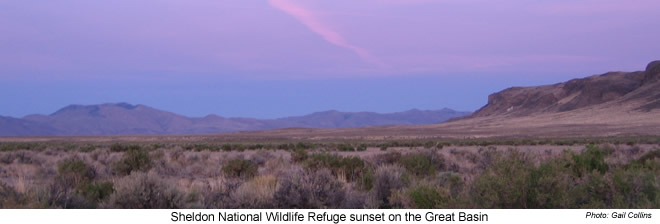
Sunset on great basin - Sheldon NWR

The landscape at Sheldon NWR is vast, rugged, and punctuated with waterfalls, narrow gorges, and lush springs among rolling hills and expansive tablelands of sagebrush and mountain mahogany.